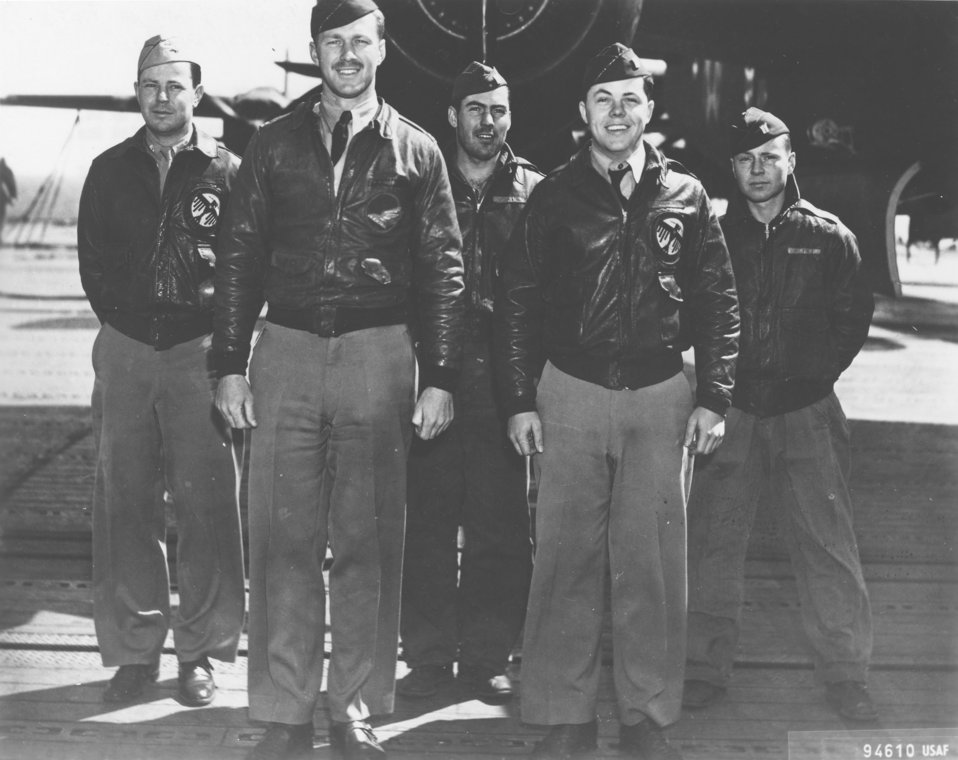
Doolittle Tokyo Raiders, Crew No. 11

Crew No. 11 (Plane #40-2249, target Yokohama): 34th Bombardment Squadron, front row: Capt. C. Ross Greening (89th RS), pilot; and Lt. Kenneth E. Reddy, copilot; back row: Lt. Frank A. Kappeler, navigator; Staff Sgt. William L. Birch, bombardier; and Sgt. Melvin J. Gardner, flight engineer/gunner.